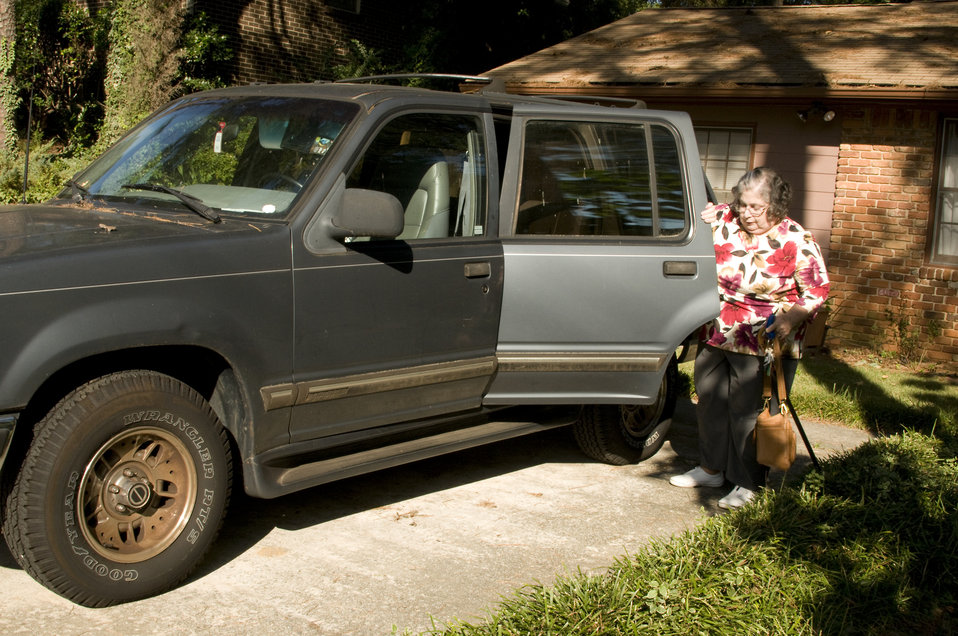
The woman pictured here is a rheumatoid arthritis patient, and was not letting her painful condition impeded her from carrying on with her daily activities, which included the use of a baggage carrier that she was using to move a small piece of luggage over to her vehicle after exiting her home. Note that in her left hand she held on to the luggage carrier and handbag, using the right to open the rear door in order to load her luggage into the back seat area.